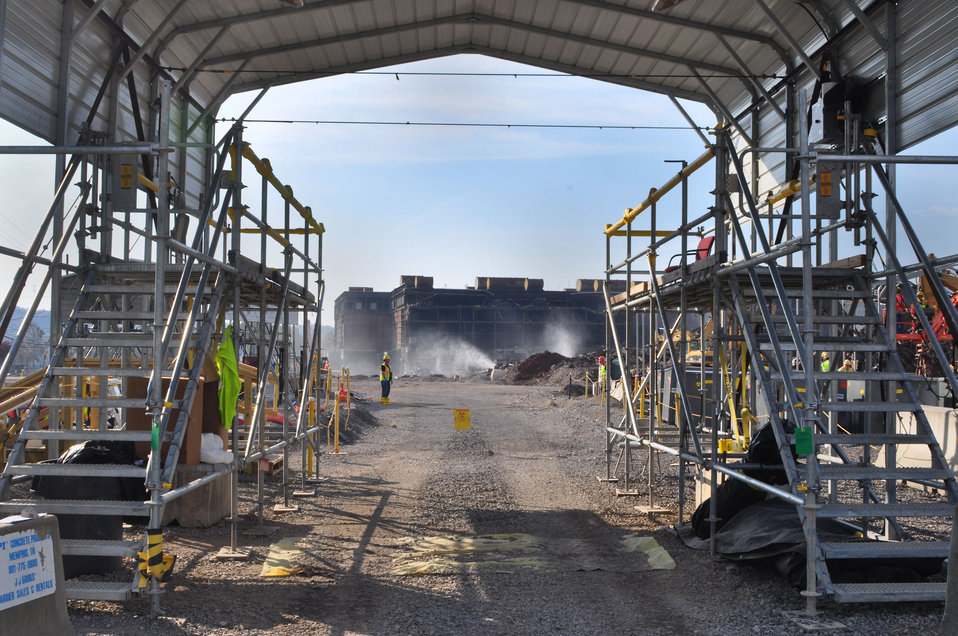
D and D Clean Up Work at K-25 Oak Ridge 2013

13-124-201 DOE photo Lynn Freeny 10-30-2013 Oak Ridge Tennessee